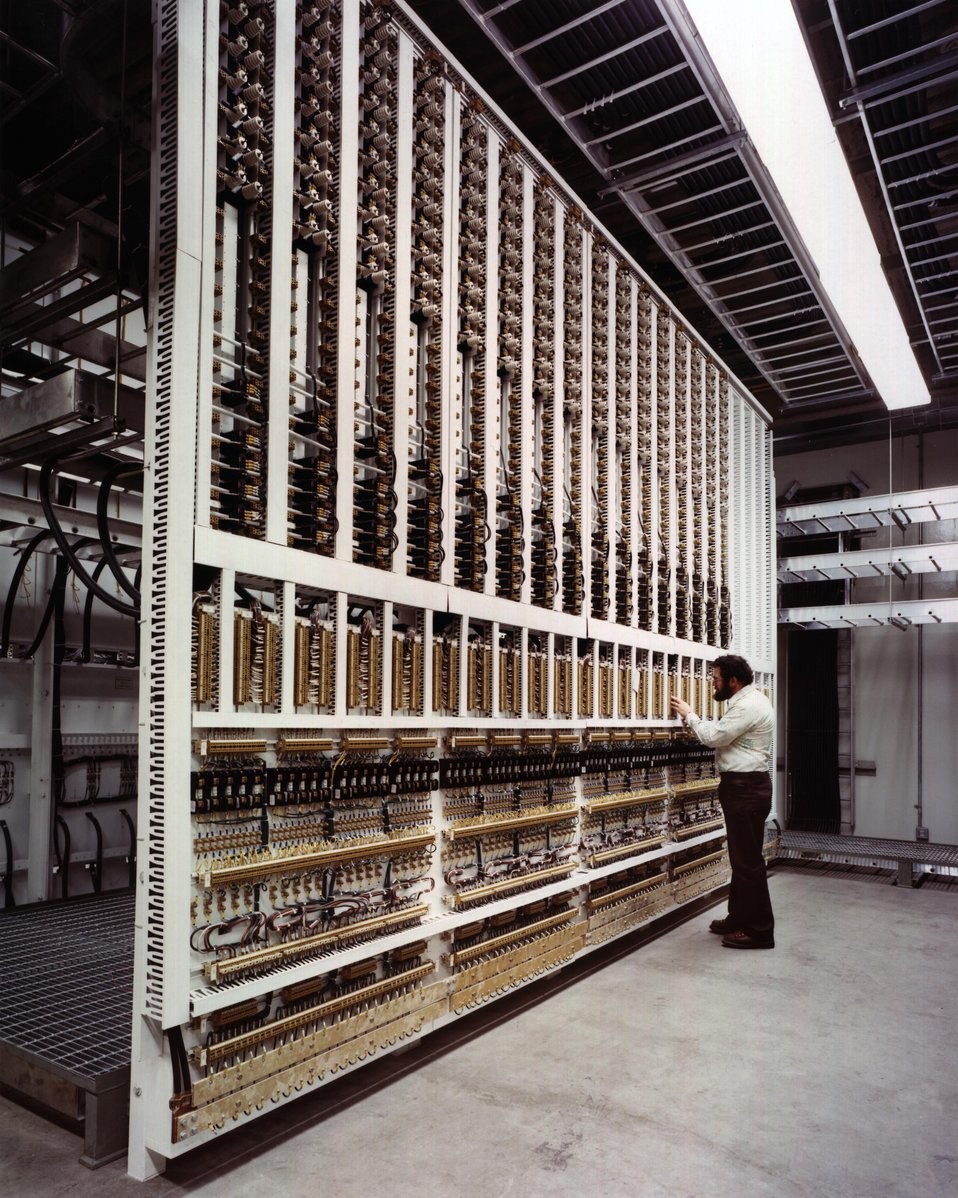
THE HIGH VOLTAGE PANEL SERVES AS A 'SWITCHBOARD' FOR ROUTINE DISTRIBUTION OF DC POWER GENERATED DURING TESTING.

AUTHORIZED AS A TEST FACILITY TO STUDY MAGNETOHYDRODYNAMICS (MHD) AS A METHOD OF PRODUCING ELECTRICITY, THE C.D.I.F. IS DESIGNED TO TEST ALL MAJOR COMPONENTS AND SUBSYSTEMS RELATED TO THE MHD PROCESS. THE C.D.I.F. WILL BEGIN TESTING AT THE 50 MWT LEVEL BUT WILL LATER EXPAND TO THE 100 MWT LEVEL. THE MHD TESTING BEGAN DECEMBER 3, 1980.